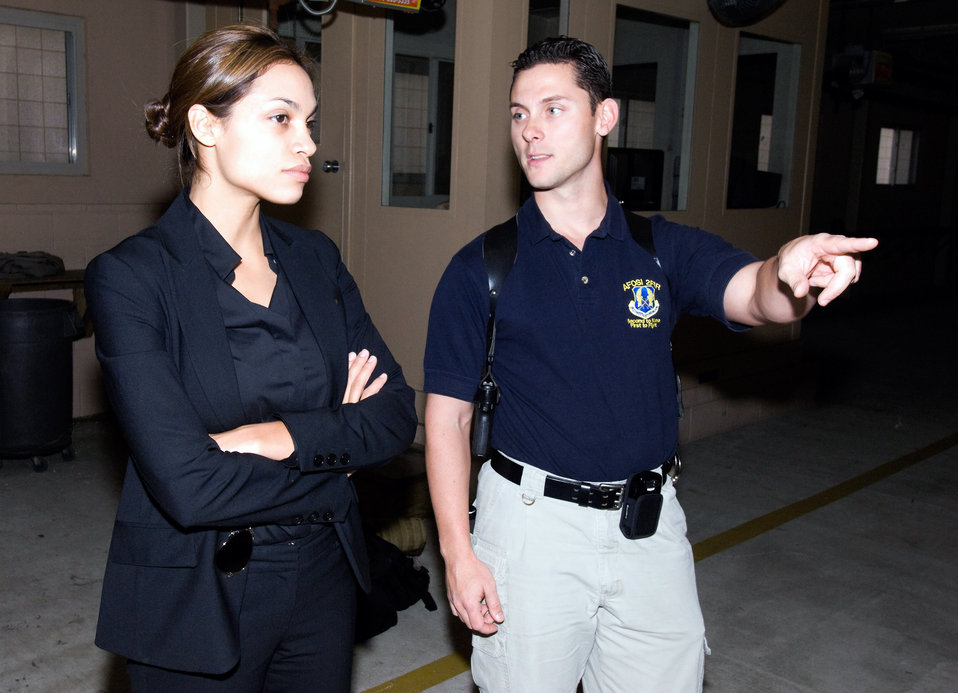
Air Force provides support in new Hollywood movie

Rosario Dawson receives a safety briefing from Special Agent Patrick McGee at the firing range at Andrews Air Force Base, Md. Ms. Dawson was at the base researching her role as a Special Agent with the Air Force Office of Special Investigations in the movie